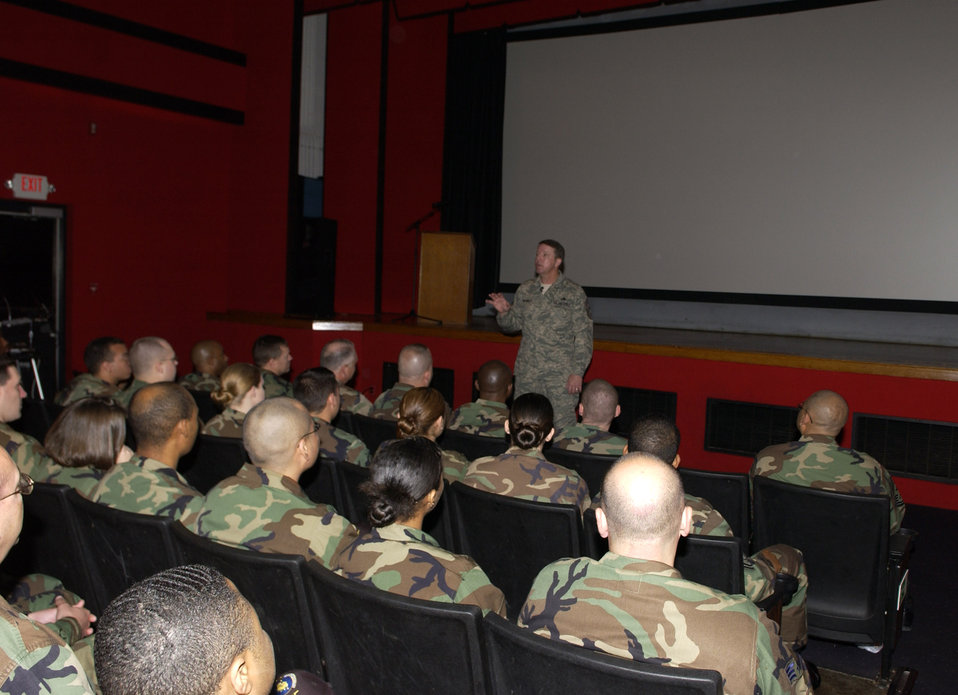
Top Airman discusess new enlisted performance report

Chief Master Sgt. of the Air Force Rodney J. McKinley talks to Airmen about upcoming changes in the Air Force during an enlisted roll call at Lajes Field, Azores. Physical fitness will now be measured on the new EPR, which will become effective this summer.